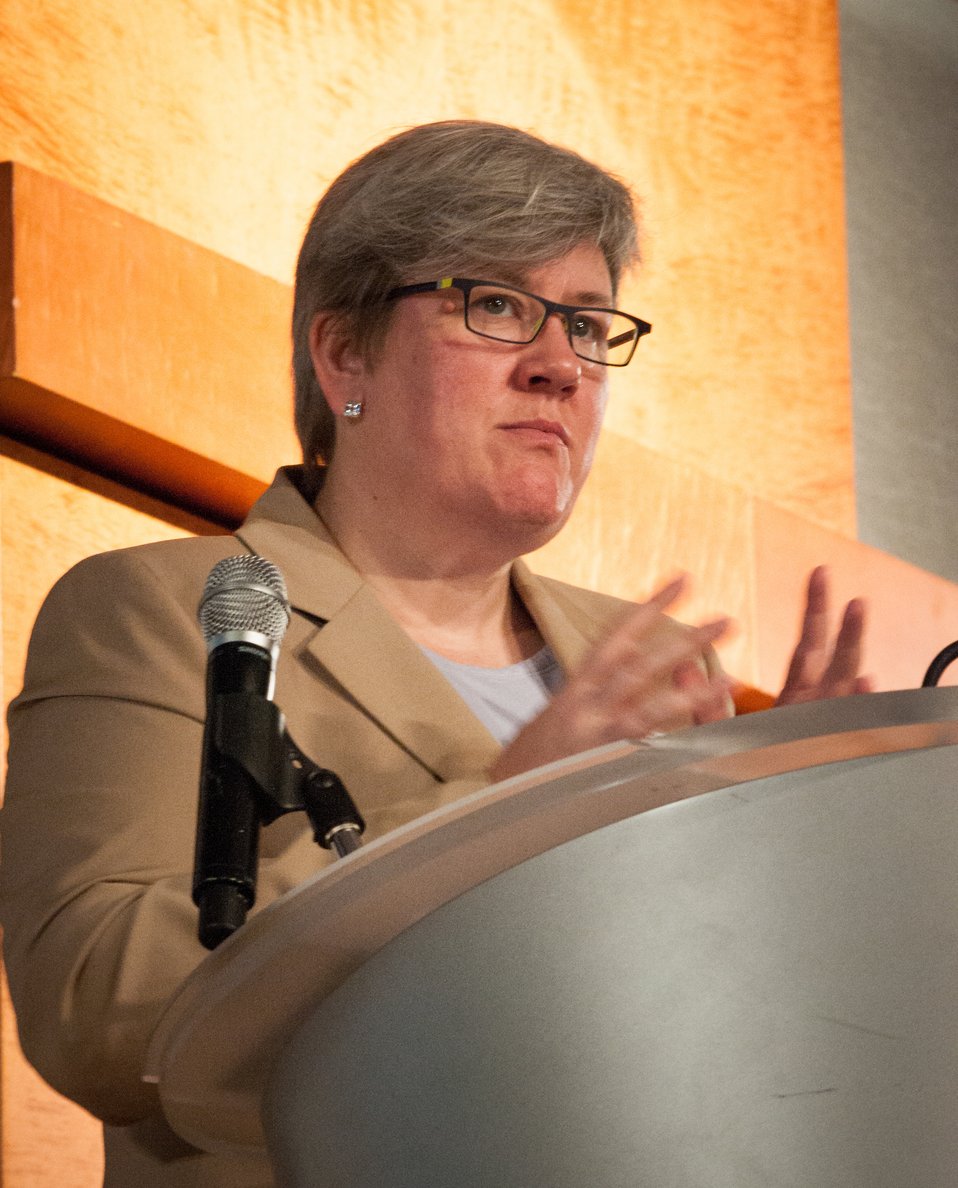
World Bank Vice President Dr. Rachel Kyte makes opening remarks at the G-8 International Conference on Open Data for Agriculture in Washington, D.C. on Monday, Apr. 29, 2013. Agriculture Secretary Tom Vilsack announced the launch of a new 'virtual community' as part of a suite of actions, including the release of new data, that the U.S. is taking to give farmers and ranchers, scientists, policy makers and other members of the public easy access to publicly funded data to help increase food security and nutrition.